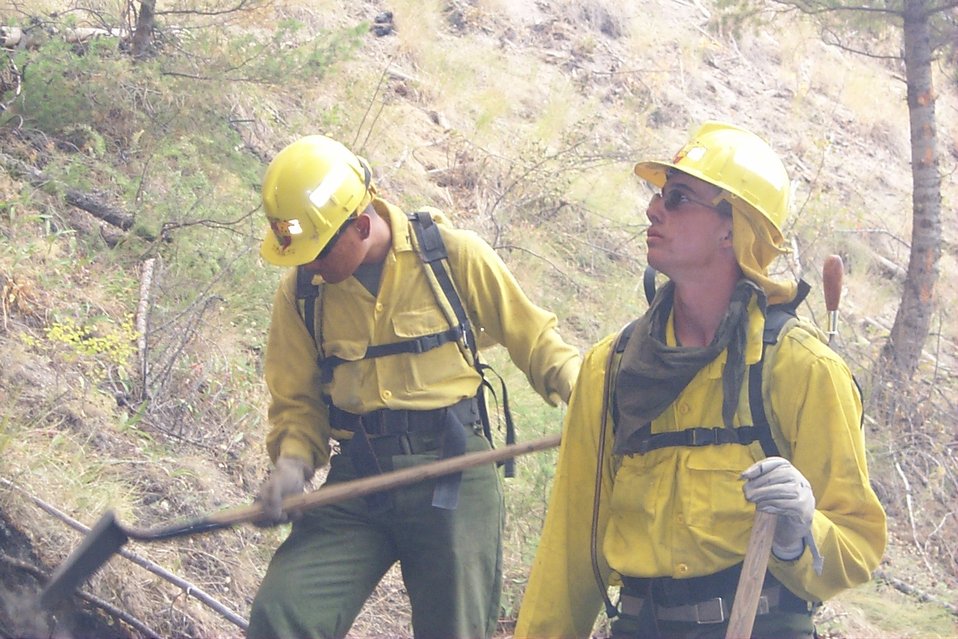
Line crew Fire Clearwater Fire Salmon Field Office USRD Upper Snake River District